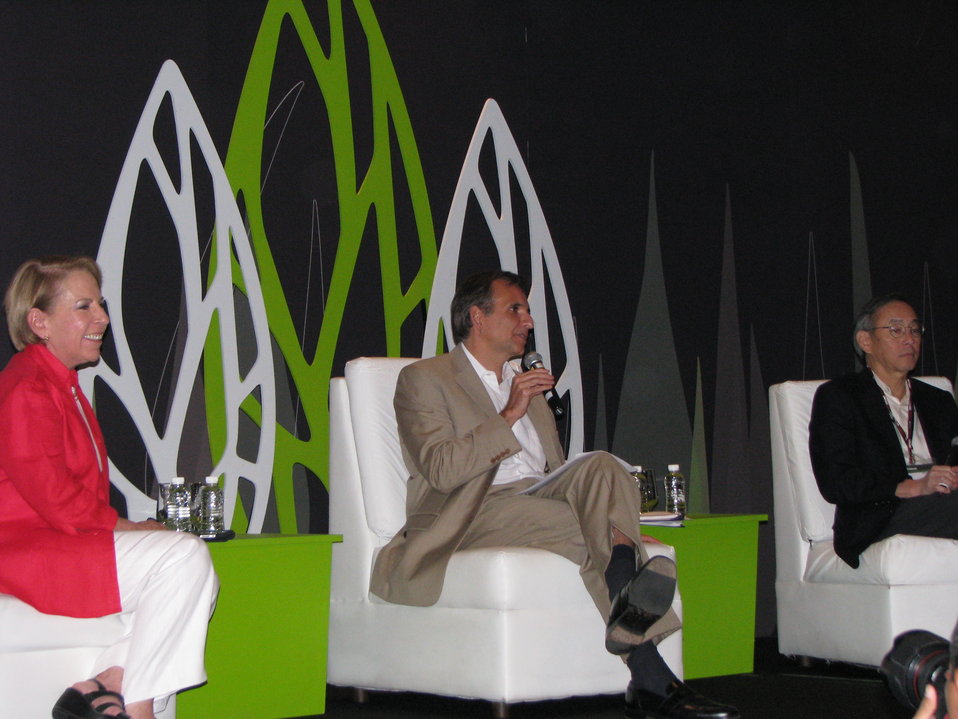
Ambassador Pascual Moderates a Green Solutions Panel

U.S. Ambassador to Mexico Carlos Pascual, right, moderates a Green Solutions panel at the Fiesta Americana Grand Coral Beach hotel in Cancun, Mexico, on December 6, 2010.